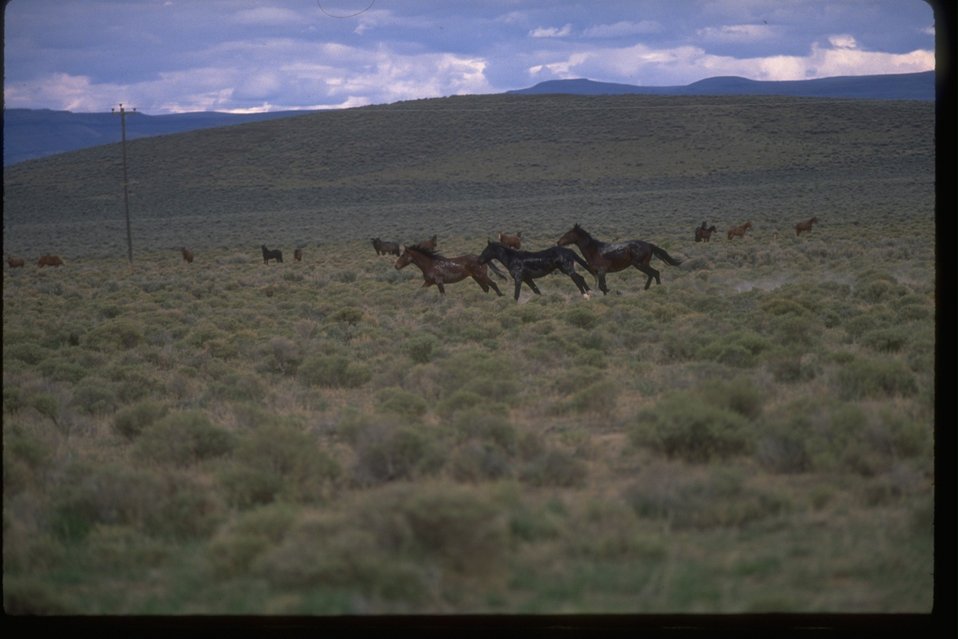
Horses at Trout Creek Mines.